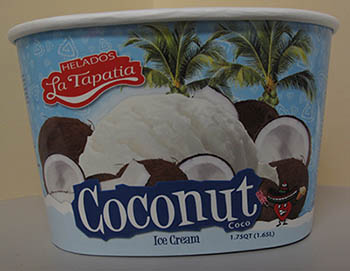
RECALLED – Ice cream products

March 19, 2014 – Product Recall – Helados La Tapatia, Inc. Recalls Products Because of Possible Health Risk.